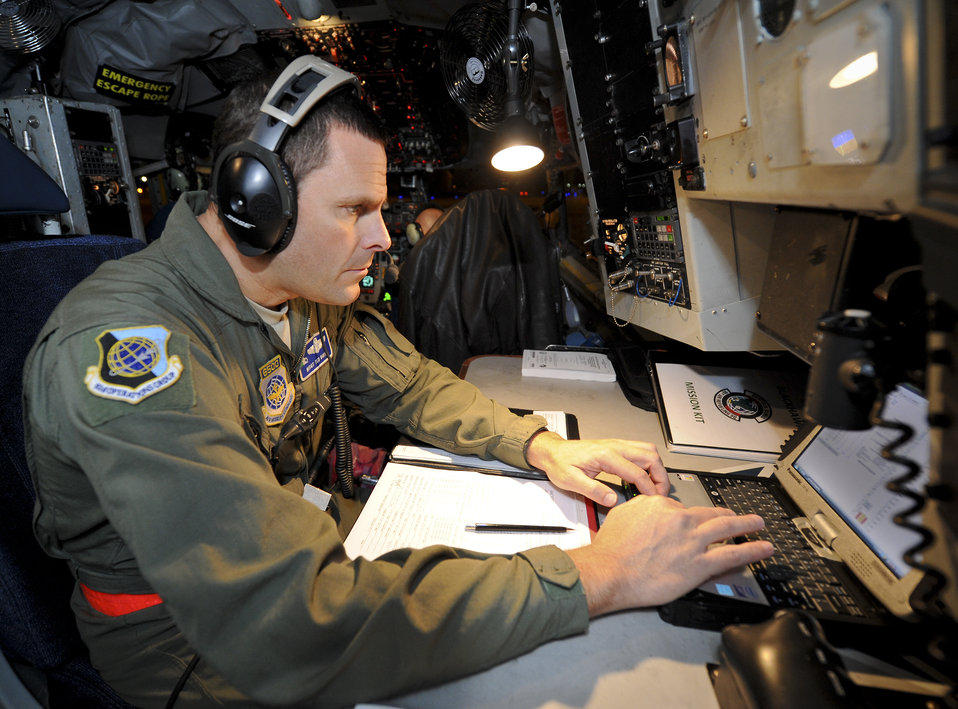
Breaking records

Master Sgt. Ted Buit prepares for an upcoming night operation inside the cockpit of a KC-135 Stratotanker at Fairchild Air Force Base, Wash., Nov. 15, 2012. Buit is the 92nd Operations Group standards evaluations NCO in charge and career boom operator. On this flight he surpassed 7,500 mishap free flying hours.